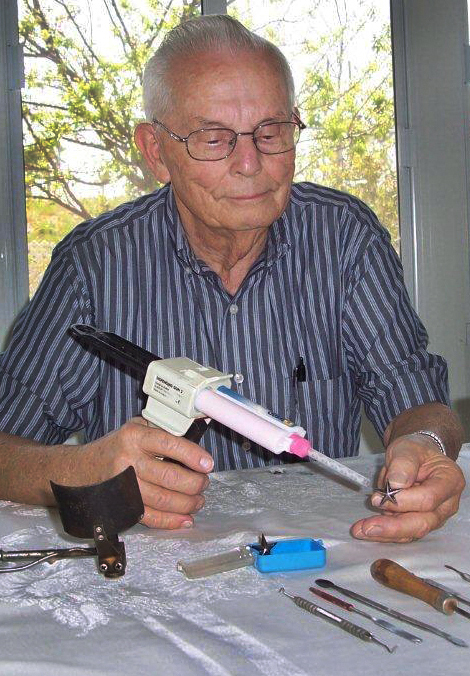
'Making rank'

Delmar Chase crafts brigadier general's stars June 15, 2010, at his home in Calimesa, Calif. Mr. Chase is the father of Brig. Gen. Sandra Finan. A retired dental technician, Mr. Chase has hand made an insignia for each rank for the general since she was a major. General Finan is the Air Force Global Strike Command Inspector General.